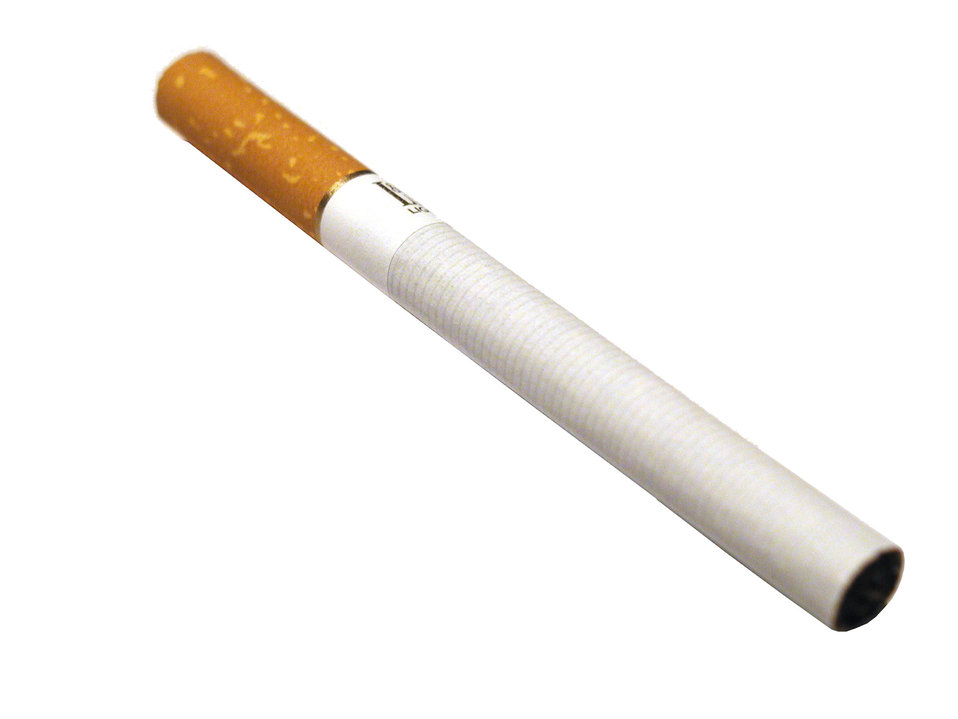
Čeština: Cigareta L&M L&M cigarette.